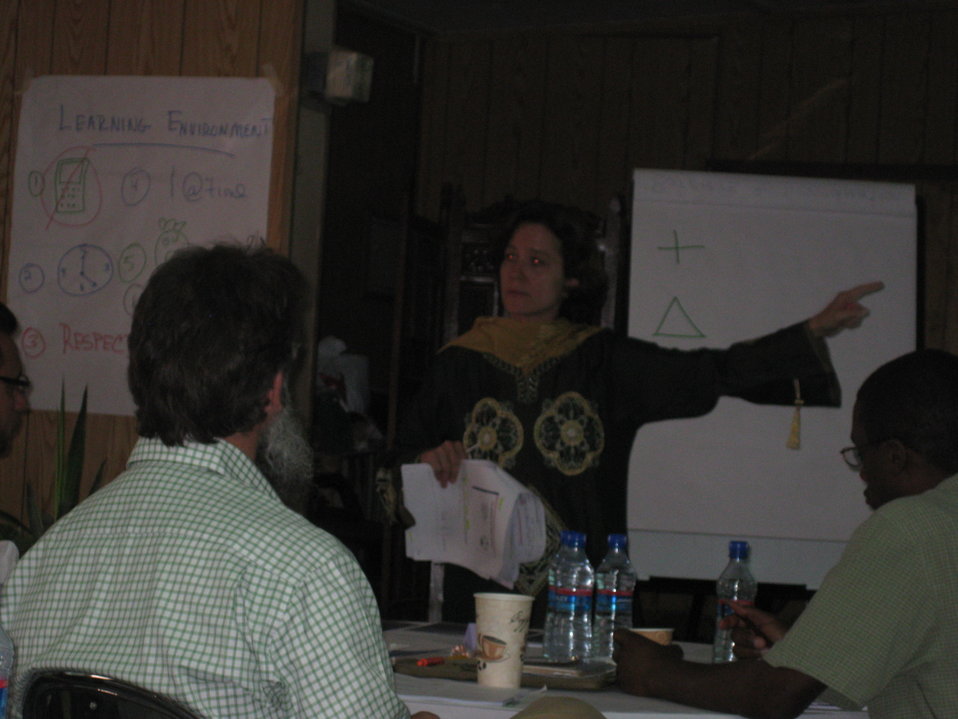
Afghan Youth Voices 026